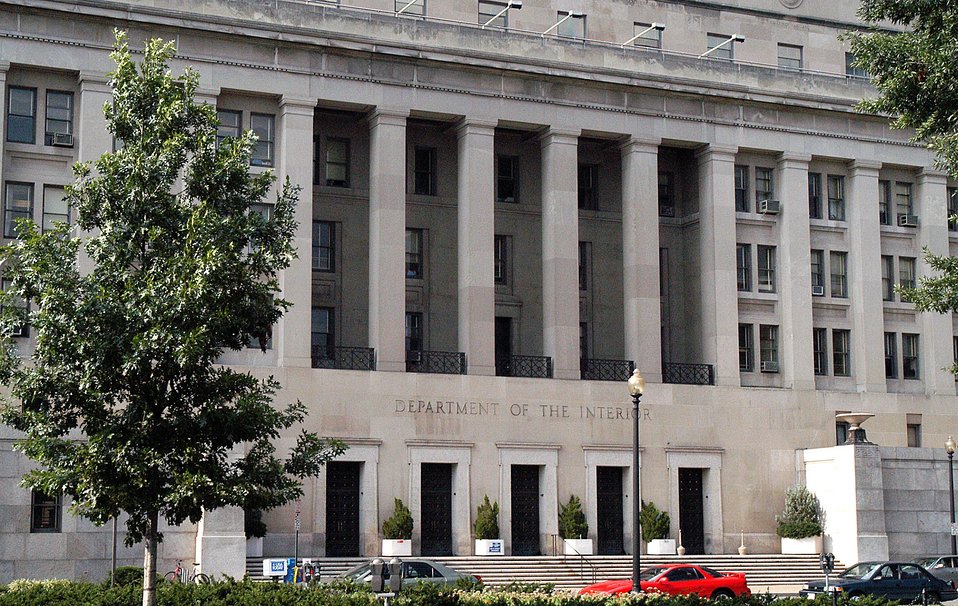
Department of the Interior building in Washington DC on 1849 C Street N.W. Photo by Tom Iraci, July 2004.